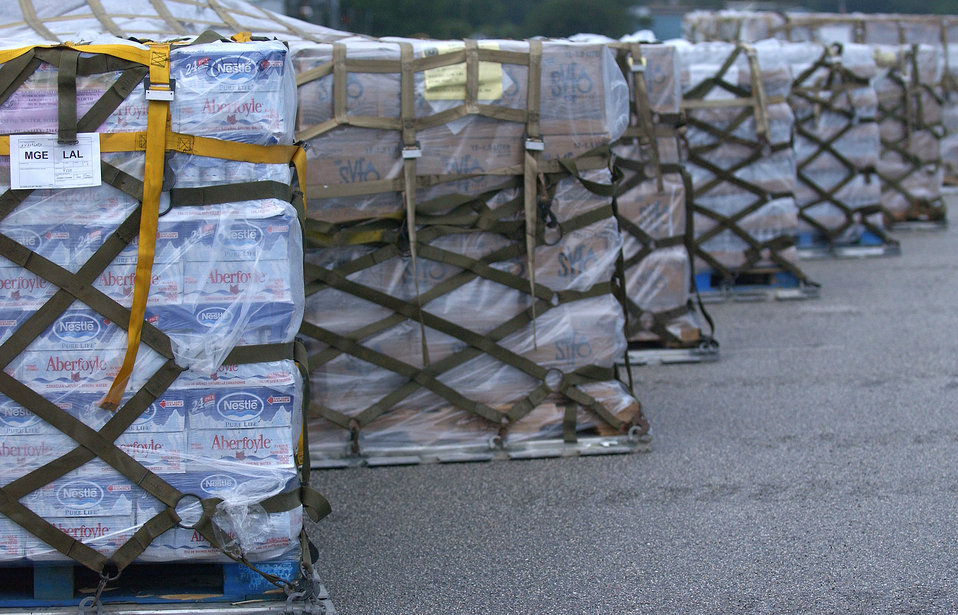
Hurricane Charley relief

LAKELAND, Fla. -- Pallets wait in a staging area here before being distributed to Hurricane Charley victims Aug. 14. Lakeland Regional Airfield has become the center of relief operations in Florida for the Federal Emergency Management Agency. The U.S. Air Force is providing support by airlifting equipment, people and supplies, expediting the delivery of the items.